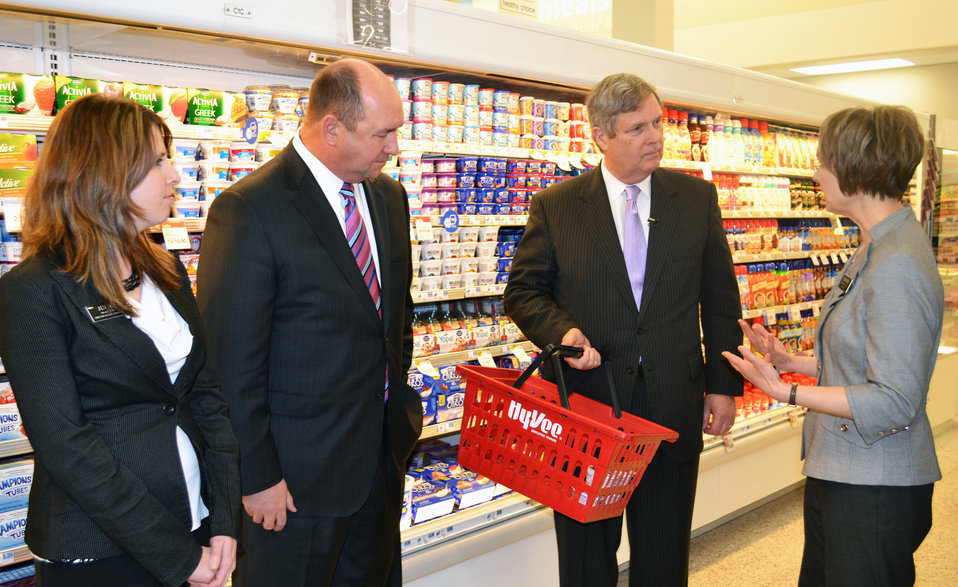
Agriculture Secretary Tom Vilsack visited a Hy-Vee grocery store in Sioux Falls, South Dakota to discuss USDA efforts to promote fruit and vegetable consumption, improve childhood nutrition and prevent obesity to raise a healthier generation of Americans. He announced the results of a pilot program aimed at increasing fruit and vegetable consumption in America’s poorest schools.